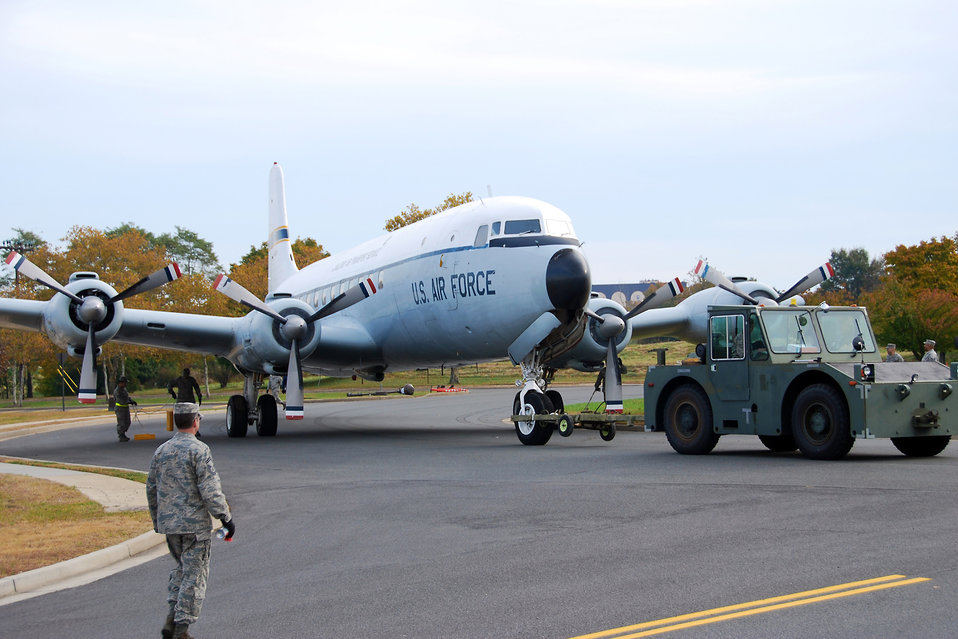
Aircraft Restoratioin

Airmen tow a C-118 Liftmaster from its static display area near the passenger terminal at Joint Base McGuire-Dix-Lakehurst, N.J., Oct. 23, 2009. The aircraft once flew an Army sergeant by the name of Elvis Presley on his return from an overseas tour in Germany in 1960. The aircraft is being resurfaced with environmentally-friendly paints and will be put back on display by the end of summer 2011.